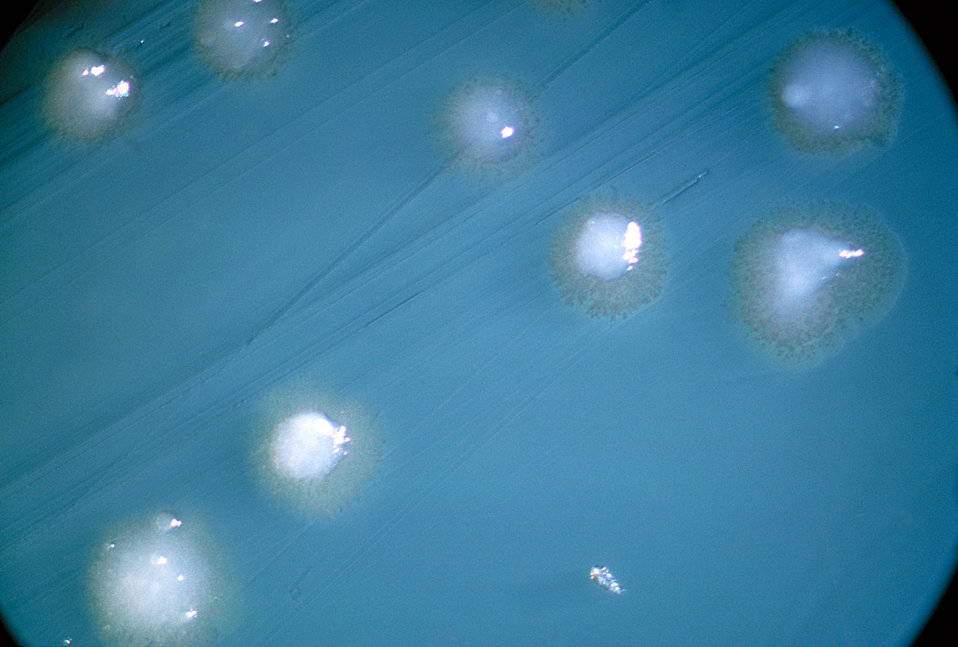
A BHI agar plate culture of Actinomyces sp., strain X-573, incubated anaerobically.